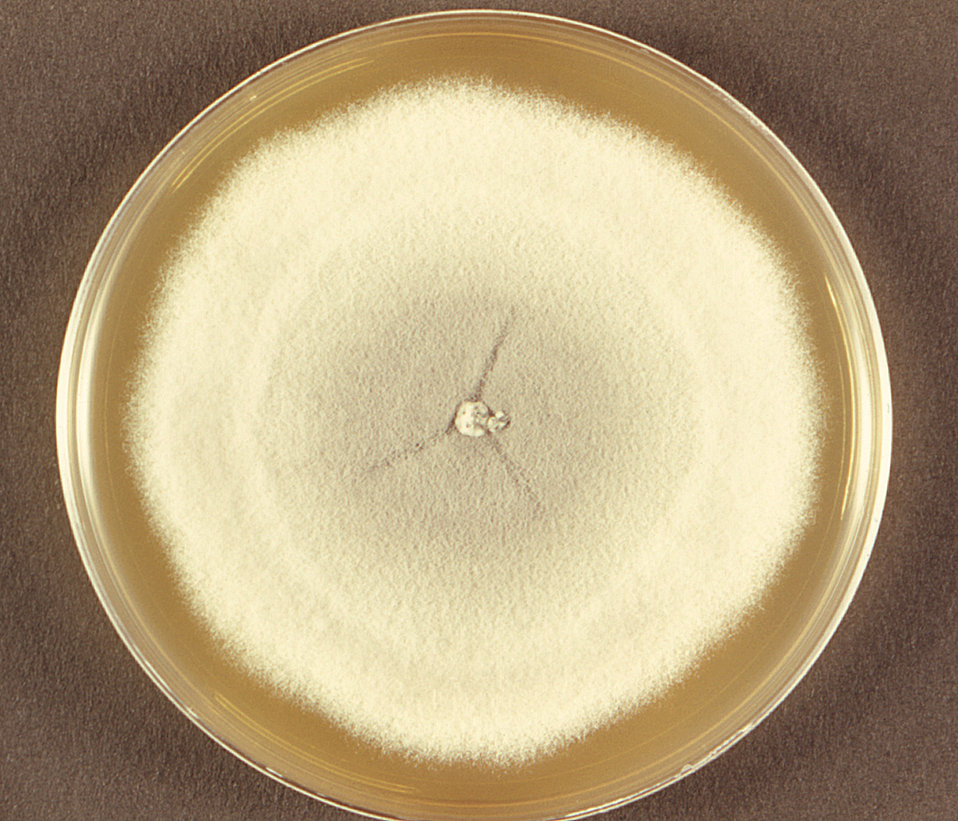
This photograph depicted a single, large colony of Acremonium falciforme fungal organisms, which had been grown on Sabouraud dextrose agar. A. falciforme colonies feature a variety of characteristics including a folded or, as it was in this case, a flat surface, and often have a raised center. Early colonies exhibit a soft, velvety texture, which becomes more cottony as the colony ages. Colonial coloration ranges from white, as seen here, to pale gray or pink.